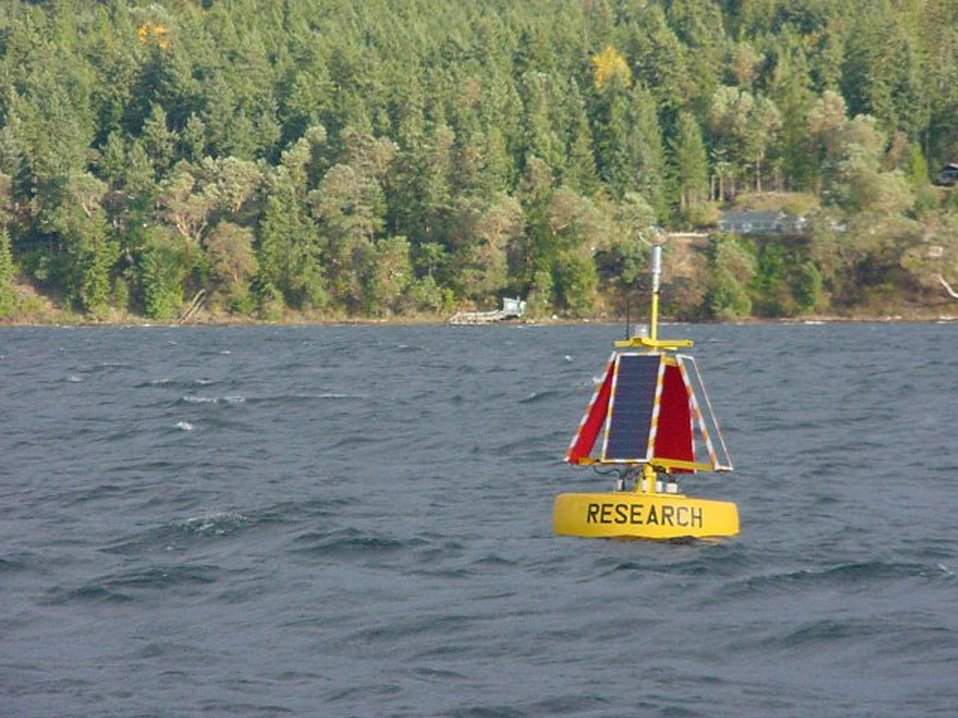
PORTABLE BUOY DEVELOPED AT PNNL TO VALIDATE SATELLITE SIGNALS RECORDED AND RELAYED FROM SPACE.

THIS PORTABLE BUOY EQUIPPED WITH CELL PHONE TECHNOLOGY AND A MULTISENSOR PLATFORM, PROVIDED QUICK RESPONSE DATA GATHERING FOR NATURAL RESOURCES ASSESSMENT. WHILE VALIDATING SATELLITE SIGNALS RECORDED AND RELAYED FROM SPACE, THE BUOY CAN SIMULTANEOUSLY MONITOR WATER QUALITY PARAMETERS IN COASTAL, ESTUARINE, AND INLAND WATERS.